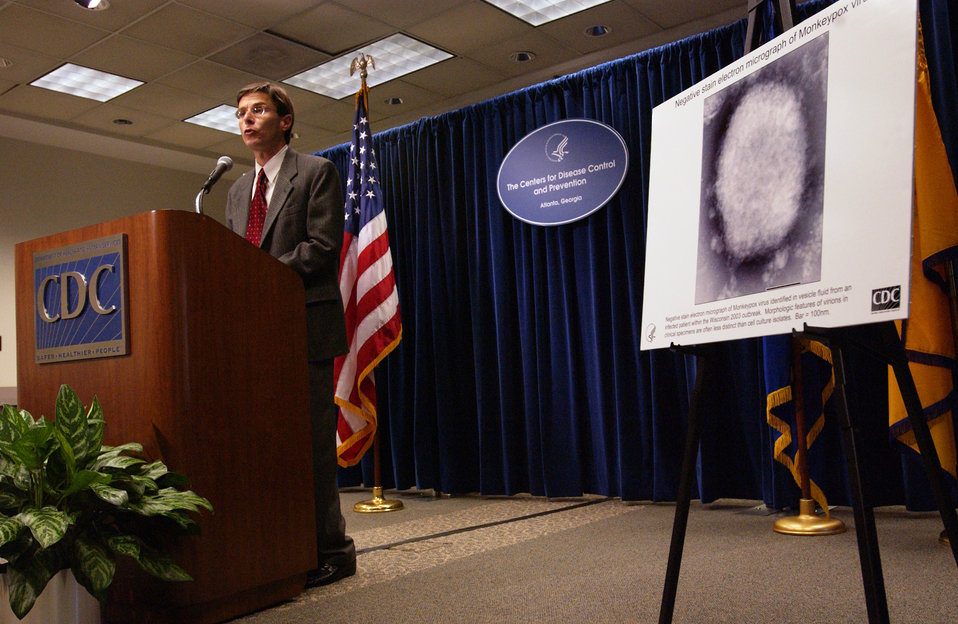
This was a Monkeypox Update press briefing presented by Dr. David Fleming, June 11, 2003.